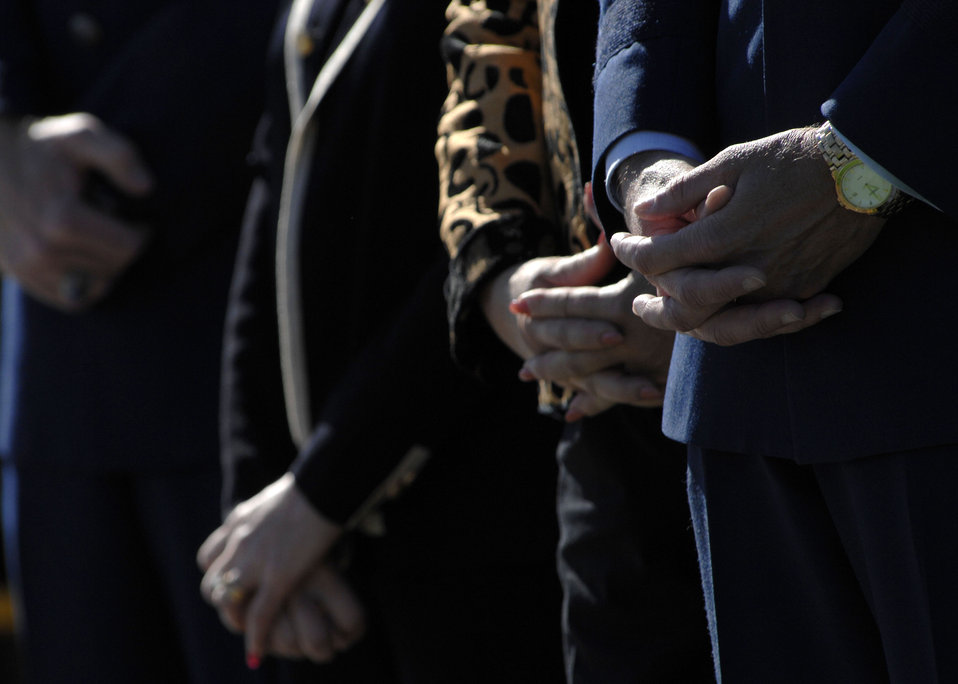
Wreath Ceremony

Heads are bowed and hands are crossed during the opening prayer of the Wreath Ceremony held at the base of the new Air Force Memorial in Arlington, Va., Oct. 15, 2006. Secretary of the Air Force Michael W. Wynne officially closed the Air Force Memorial commemoration by leading the wreath laying ceremony. On behalf of all American citizens President George W. Bush accepted the Air Force Memorial from Air Force Memorial Foundation Chairman Ross Perot Jr. during the previous day's dedication ceremony at the base of the Air Force Memorial that overlooks the Pentagon. Designed by the late James Ingo Freed the memorial with its three soaring spires inspired by the U.S. Air Force Thunderbirds bomb burst manuever, pays tribute to and honors the patriotic men and women of the U.S. Air Force and its predeccessor organizations. An open house was held near the Pentagon in conjunction with the dedication ceremony which featured performances by the U.S. Air Force Band, the U.S. Air Force Honor Guard drill team, and culminated with a concert featuring country music performer LeeAnn Womack.